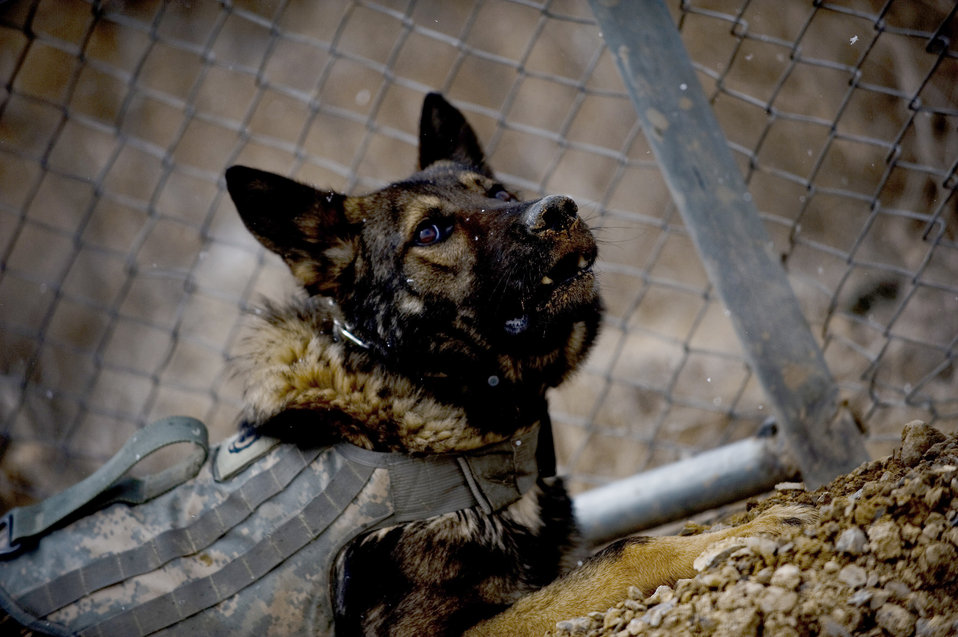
Combined Team Zabul

Edy, a military working/patrol explosive detection dog, gives an indication sign that he has sniffed out explosive-making materials during a training session Feb. 18, 2011, at Forward Operating Base Lagman, Afghanistan.